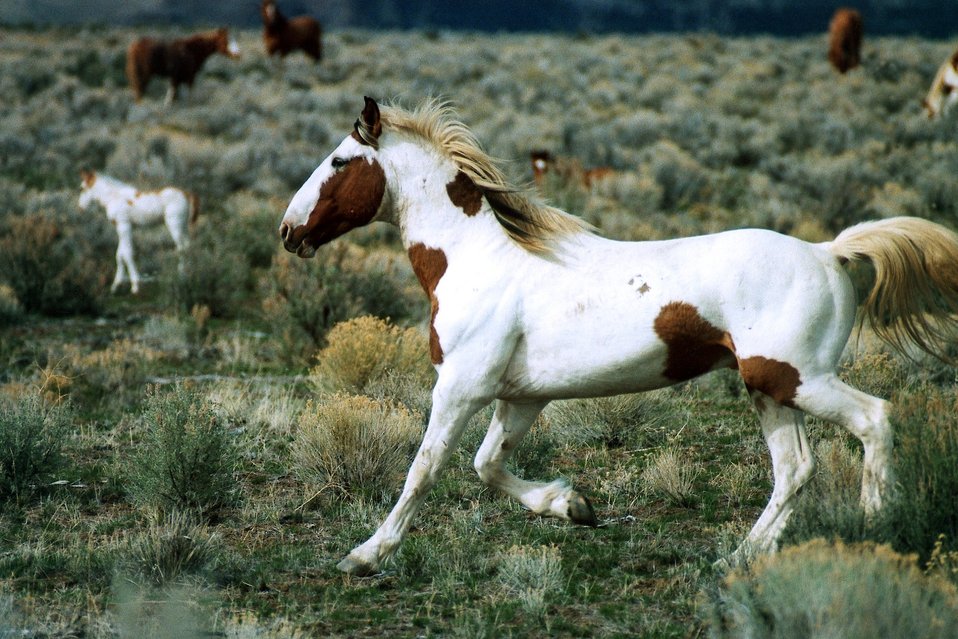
Medium shot of (alpha male) stallion.